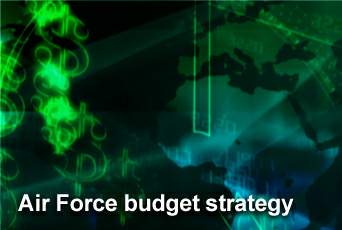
Air Force leaders testify on infrastructure budget

The four pillars of the Air Force budget strategy--people, readiness, infrastructure, and modernization were the main topics May 12 when the deputy assistant secretary of the Air Force for installations testified before the Senate Appropriations Committee on Capitol Hill.